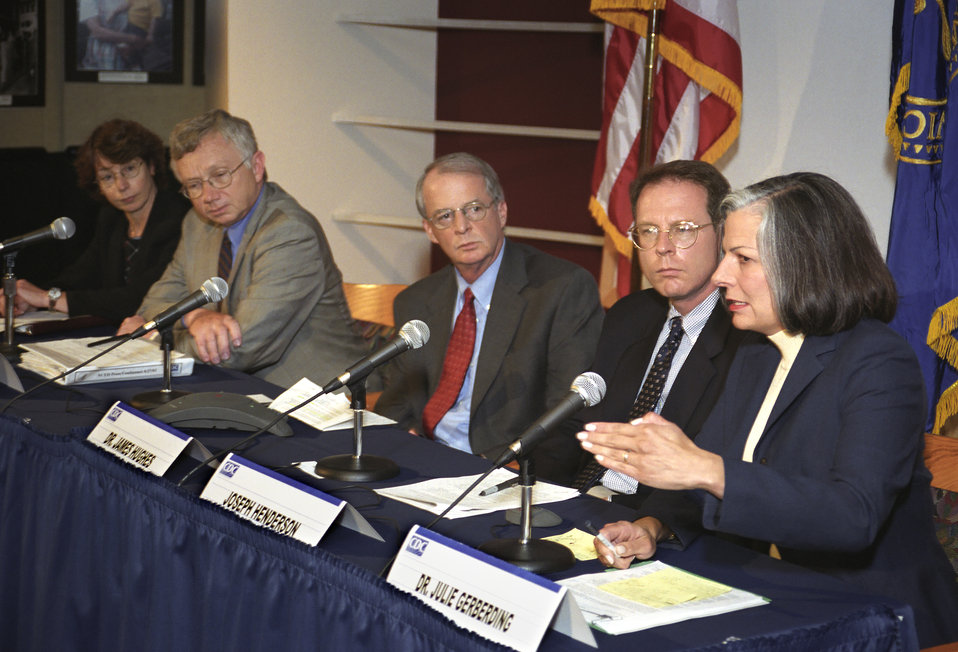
Centers for Disease Control and Prevention Bioterrorism Preparedness Press Briefing, August 27, 2002.